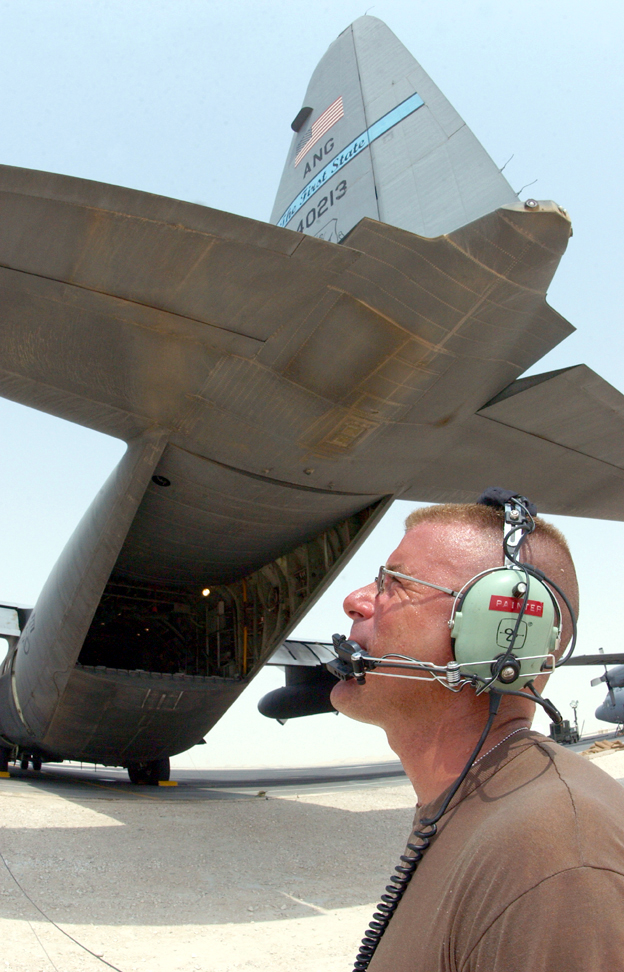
Hot time on the flightline

OPERATION IRAQI FREEDOM -- Master Sgt. Scott Nybakken prepares a C-130 Hercules for an airlift mission to Iraq. Nybakken is a crew chief with the Delaware Air National Guard's 166th Airlift Wing. Airmen endure temperatures of at least 115 degrees daily on the flightline at their forward-deployed location in Southwest Asia.